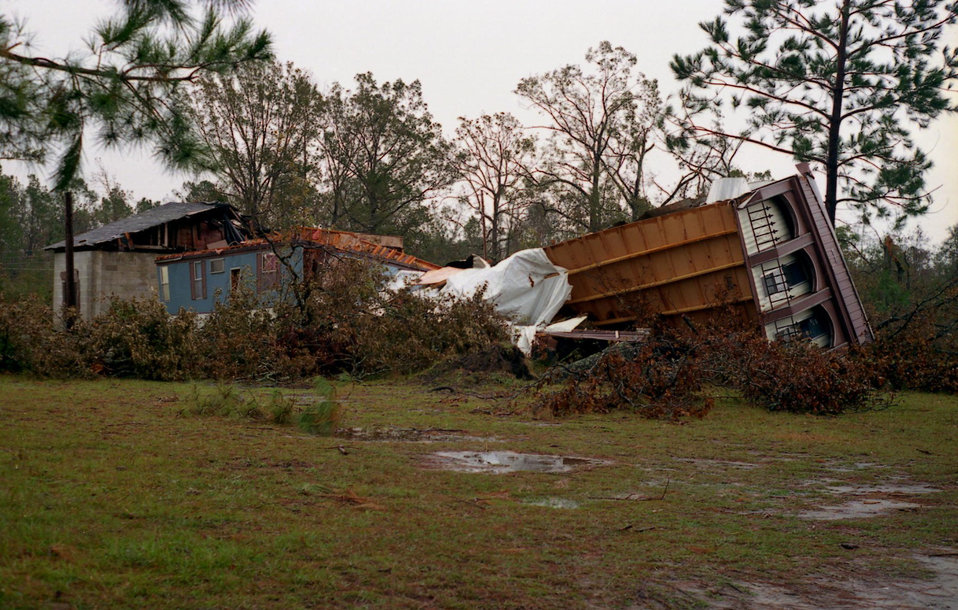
This photograph showed homes that were damaged after hurricane Hugo made landfall north of Charleston, South Carolina on September 21, 1989.